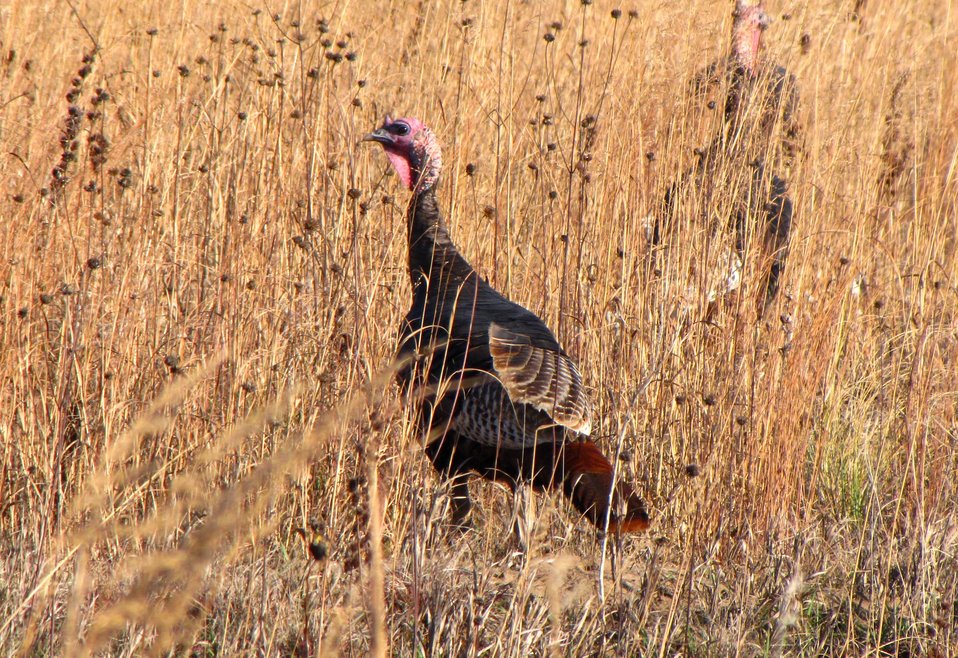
Wild Turkeys